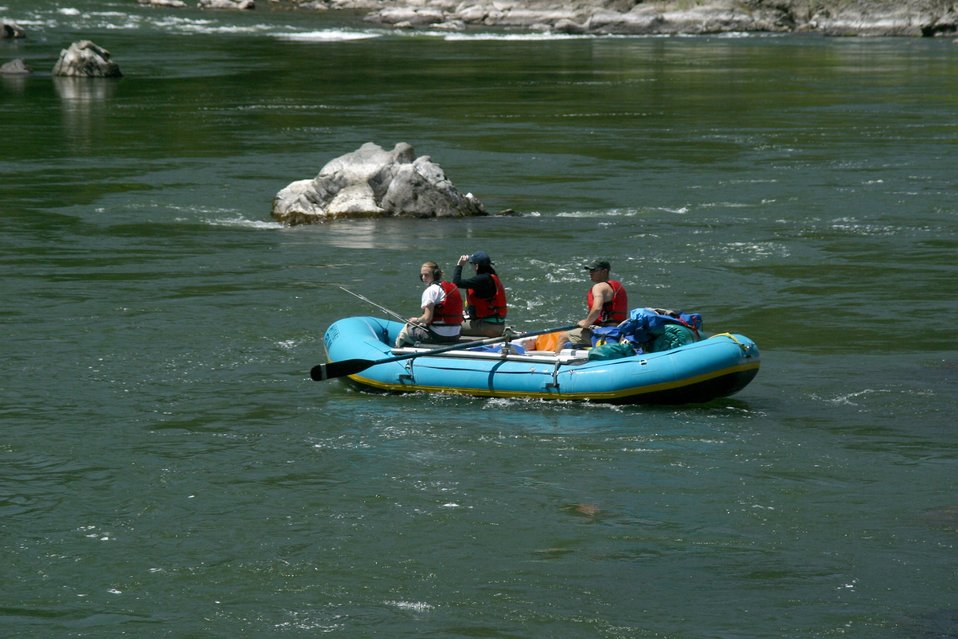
Wild section of the Rogue River from Grave Creek to Foster Bar May 19 to May 22.